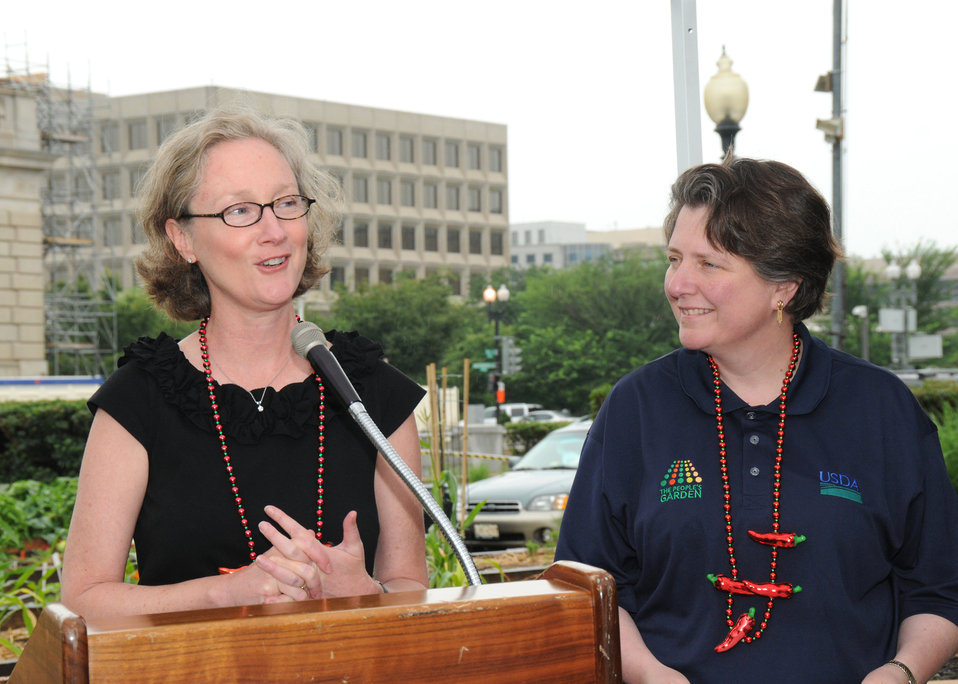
Deputy Under Secretary for Marketing and Regulatory Programs Ann Wright introduces Agriculture Deputy Secretary Kathleen Merrigan at the New Mexico Chile Pepper Fiesta held on Wednesday, June 9, 2010 on the east lawn of the Whitten Building at the USDA People’s Garden in Washington, DC. USDA photo 10di1397-65